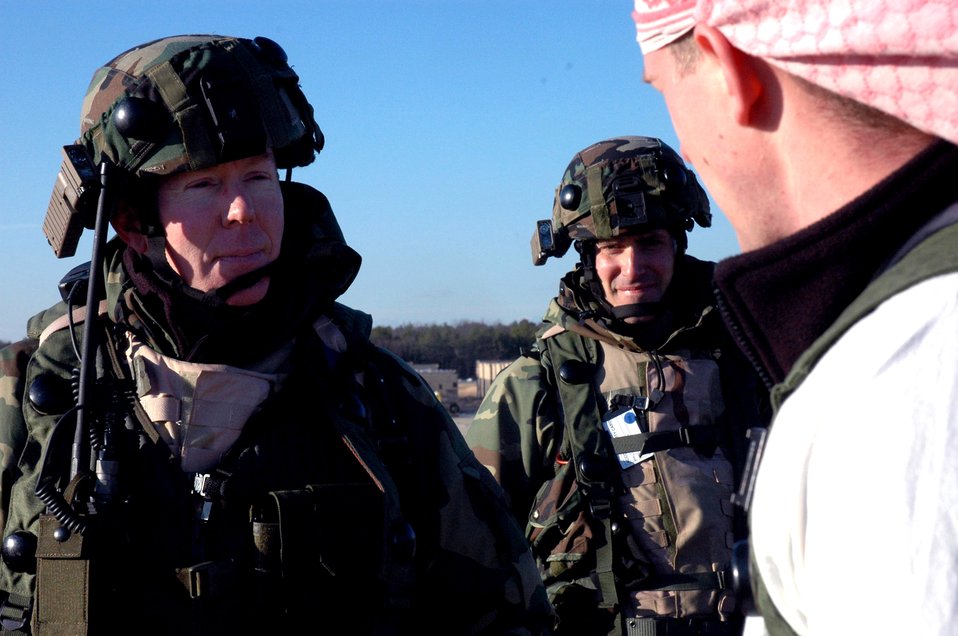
Warrior school

Col. Steve Jordan talks to